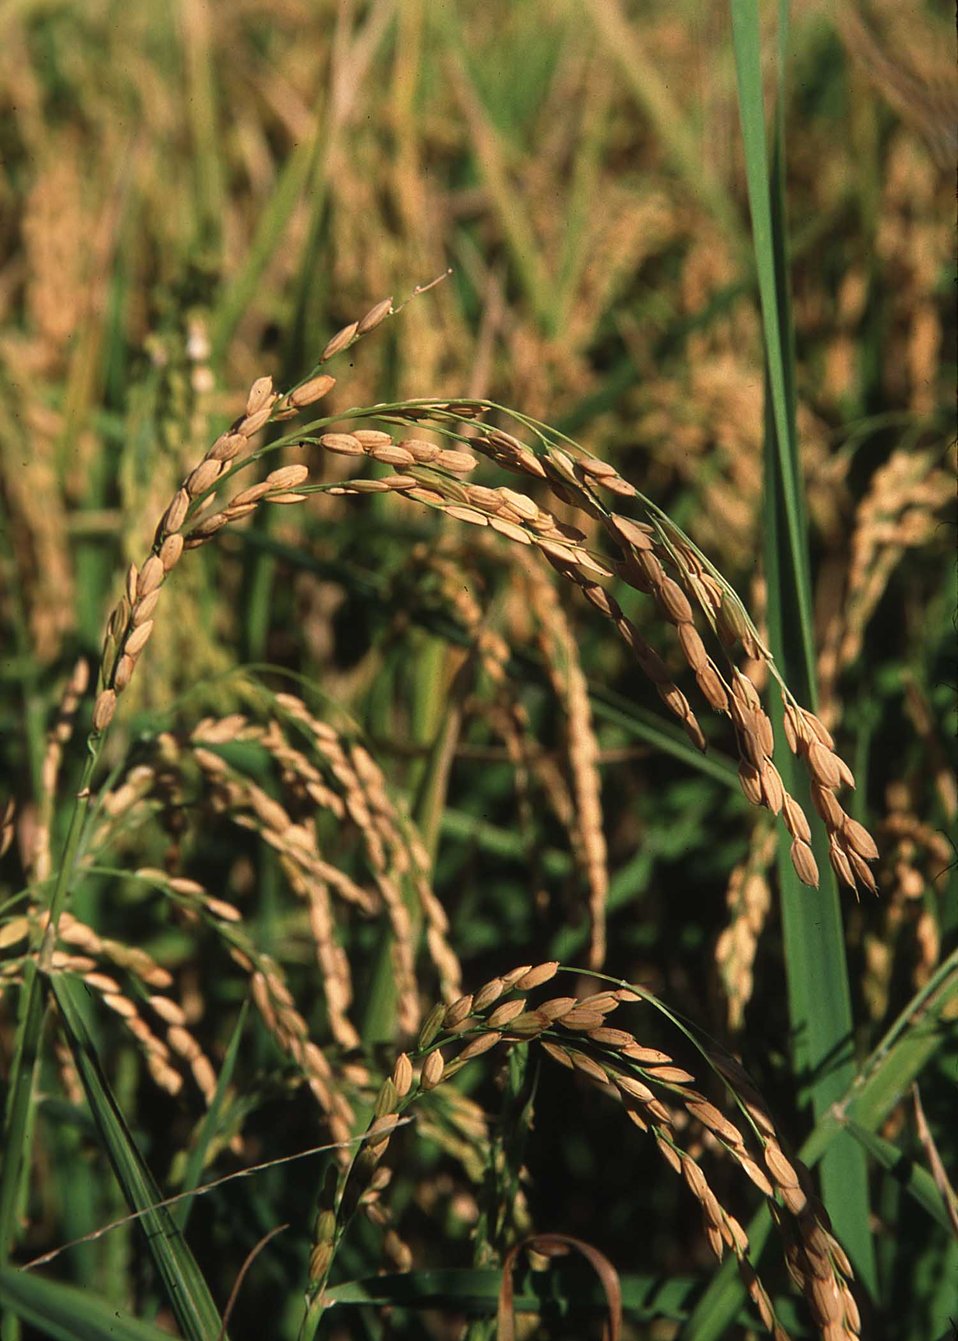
Rice field in Northern California.